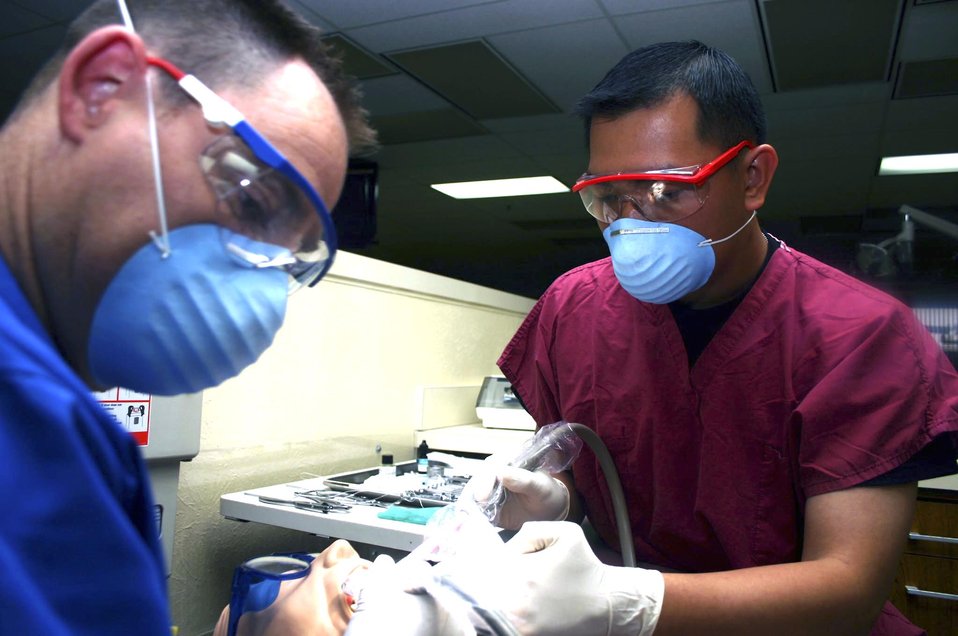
Filipino Airman sets his sights high

SHEPPARD AIR FORCE BASE, Texas -- Airman 1st Class Michael Dizon practices suctioning techniques under the watchful eye of his instructor, Master Sgt. Kevin Hayden. Airman Dizon was a dentist in the Philippines, but enlisted in the Air Force to become a dental technician. He is working toward becoming an officer and is currently assigned to the 381st Training Squadron here.